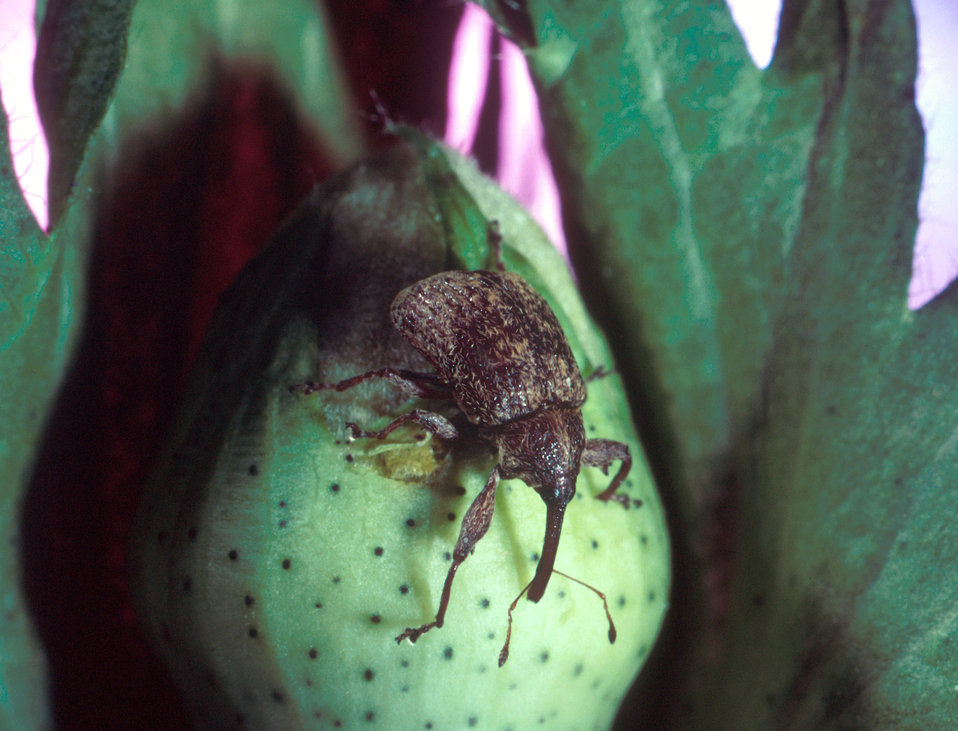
Cotton Boll Weevil feeds on a cotton plant.